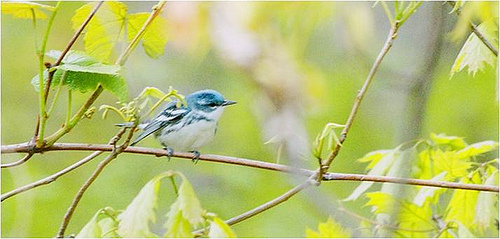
cerulean warbler